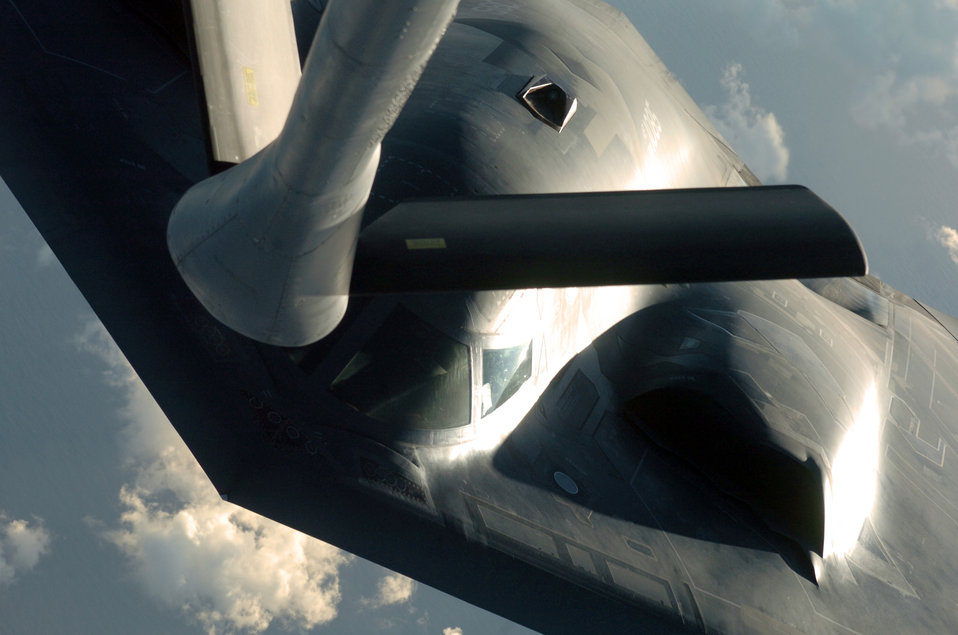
Fuel the Spirit

OVER THE PACIFIC OCEAN -- A B-2 Spirit bomber prepares to refuel from a KC-135 Stratotanker during a deployment to Andersen Air Force Base, Guam. The bomber deployed as part of a rotation that has provided U.S. Pacific Command officials a continuous bomber presence in the Asia-Pacific region, enhancing regional security and the U.S. commitment to the Western Pacific. The Spirit is from the 509th Bomb Wing at Whiteman AFB, Mo. The Stratotanker is assigned to the Illinois Air National Guard's 126th Air Refueling Wing at Scott AFB.